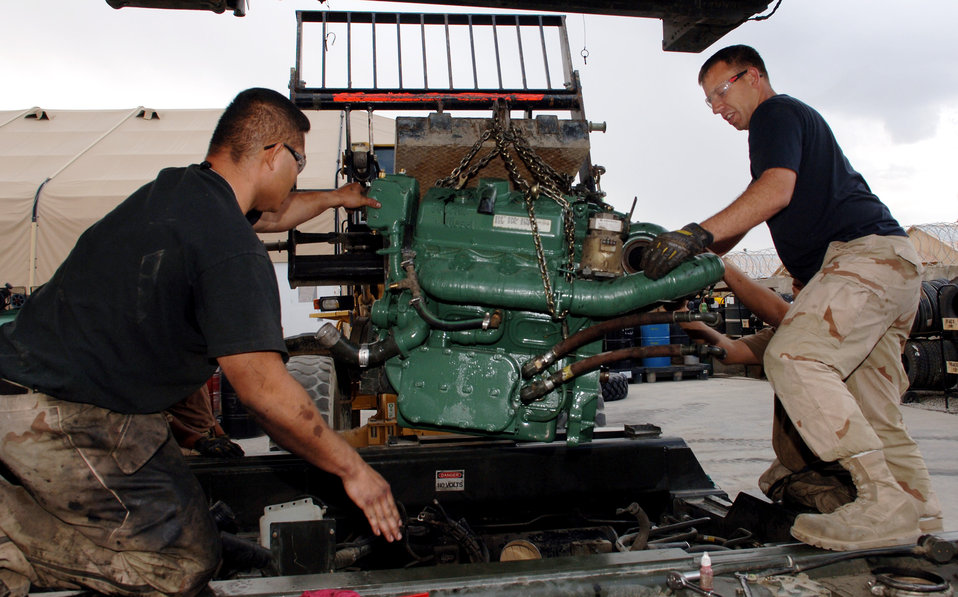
Mechanics work to keep vehicles in motion

Staff Sgt. Fernando Mendiola, left, and Senior Airman Scott Lorenz help guide a new engine into a 60k aircraft loader with the assistance of a forklift. Sergeant Mendiola is a material handling equipment mechanic and Airman Lorenz is a multipurpose vehicle mechanic.